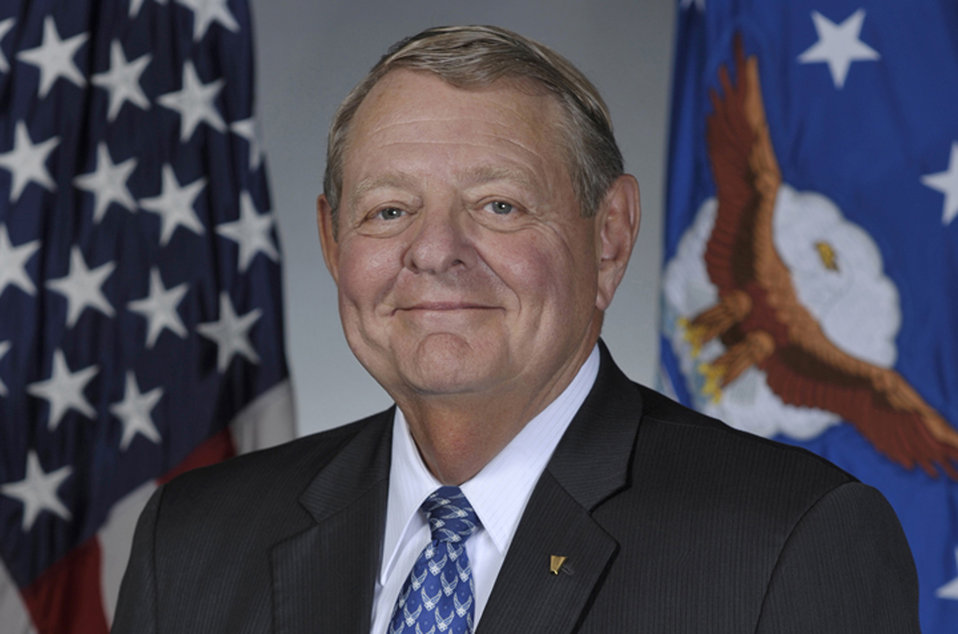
William Davidson, the administrative assistant to the secretary of the Air Force, will retire Sept. 30, 2011, after 43 years of Air Force service.